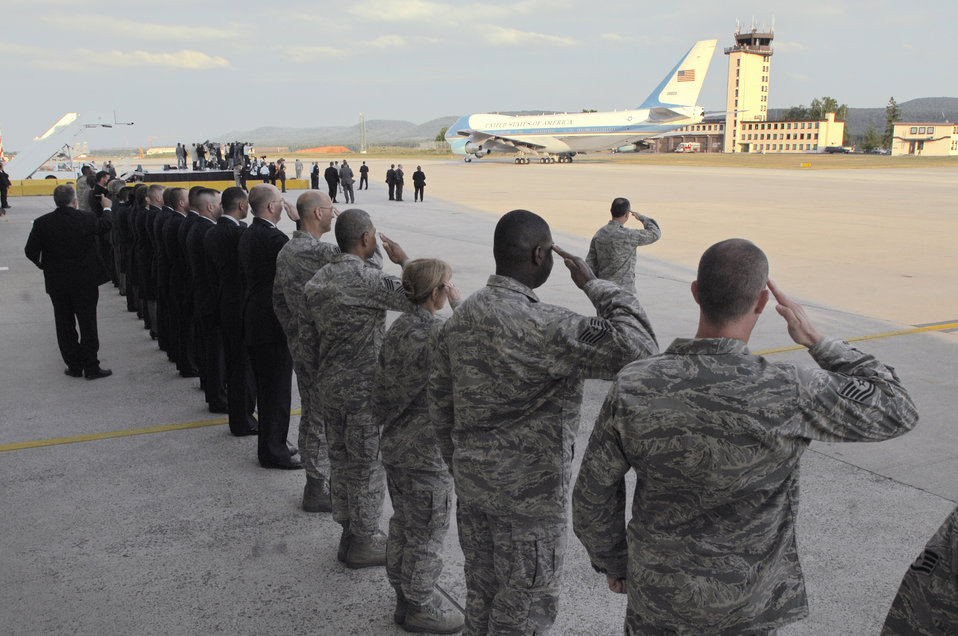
President makes stop at Ramstein Air Base

Airmen at Ramstein Air Base, Germany, salute Air Force One June 5 as it taxis for takeoff. President Barack Obama had stopped at Ramstein en route to nearby Landstuhl Regional Medical Center to visit wounded U.S. servicemembers being treated there.